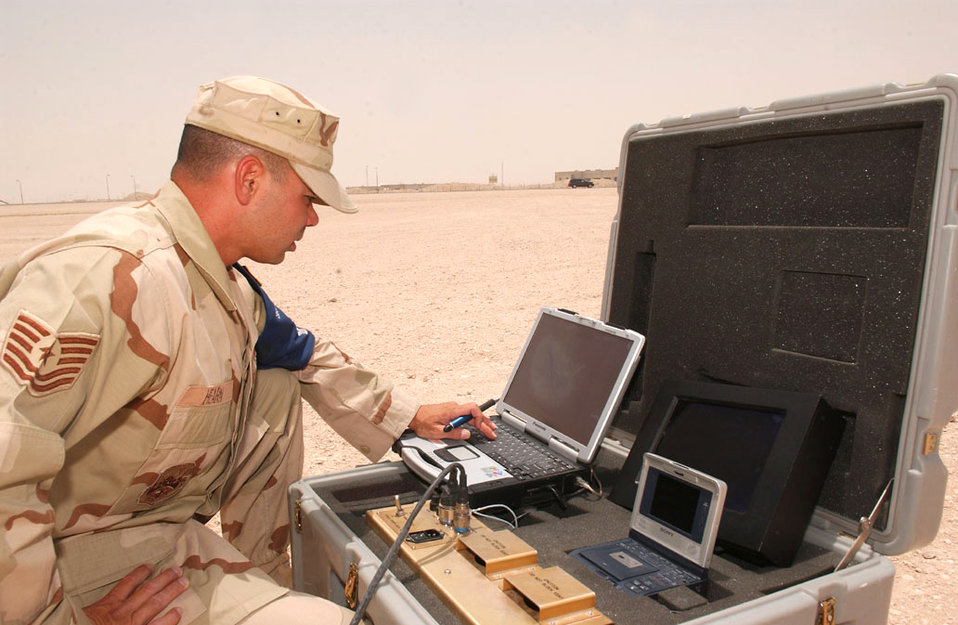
Flying force-multiplier provides eyes forward

SOUTHWEST ASIA -- Tech. Sgt. Christopher Hearn monitors the progress of a force protection airborne surveillance system vehicle as it performs reconnaissance in Southwest Asia. He is assigned to the 379th Expeditionary Security Forces Squadron at a forward-deployed location and is from Elmendorf Air Force Base, Alaska.